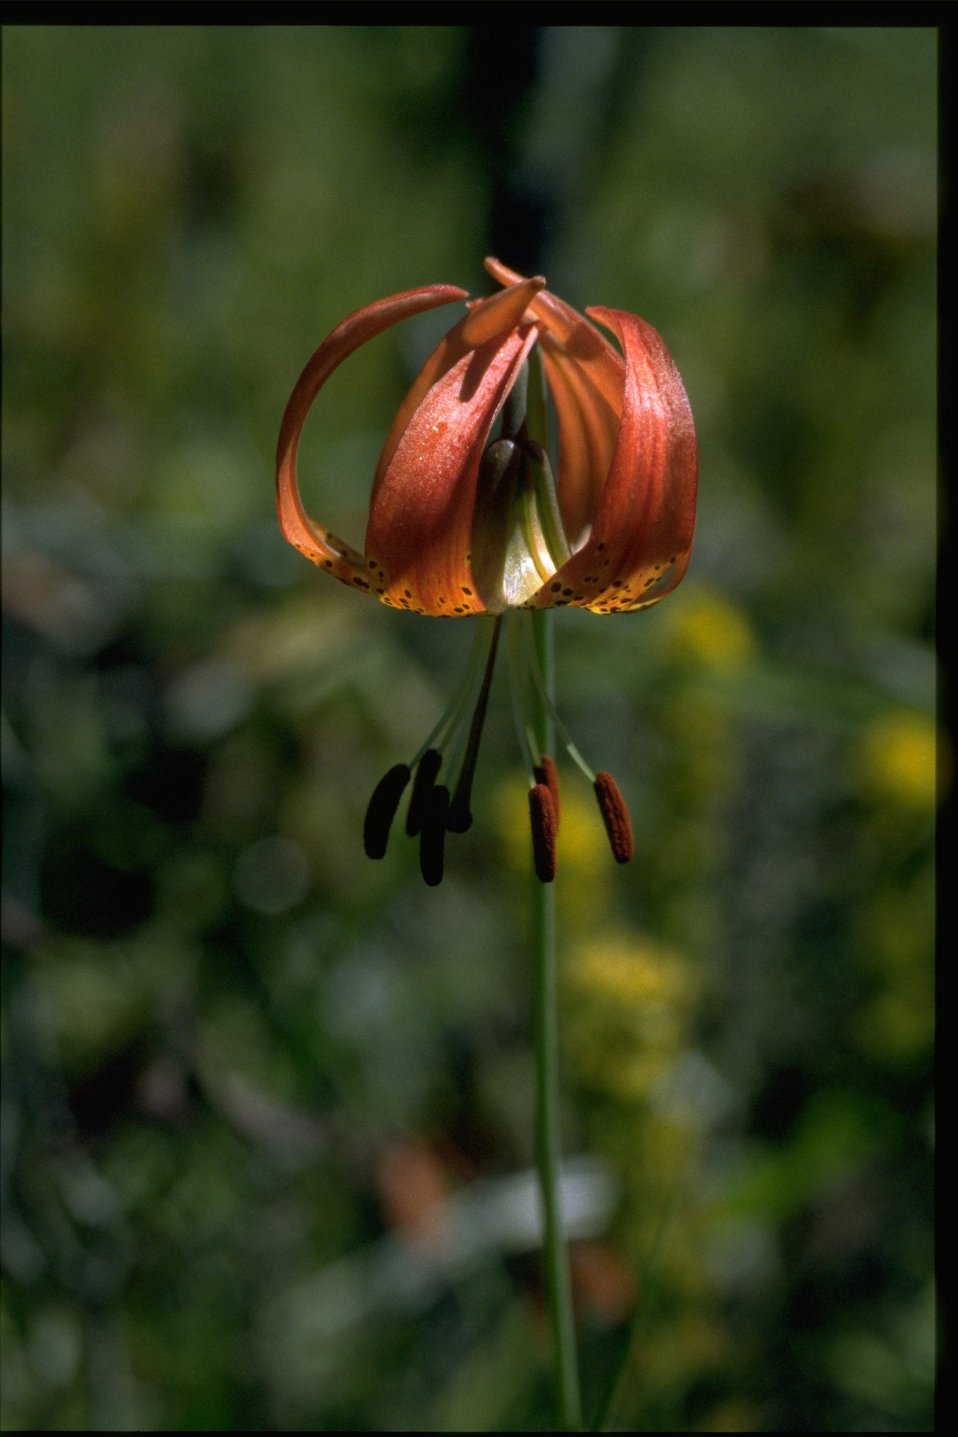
Closeup shot of Lilium pardalinum var vollmeri.